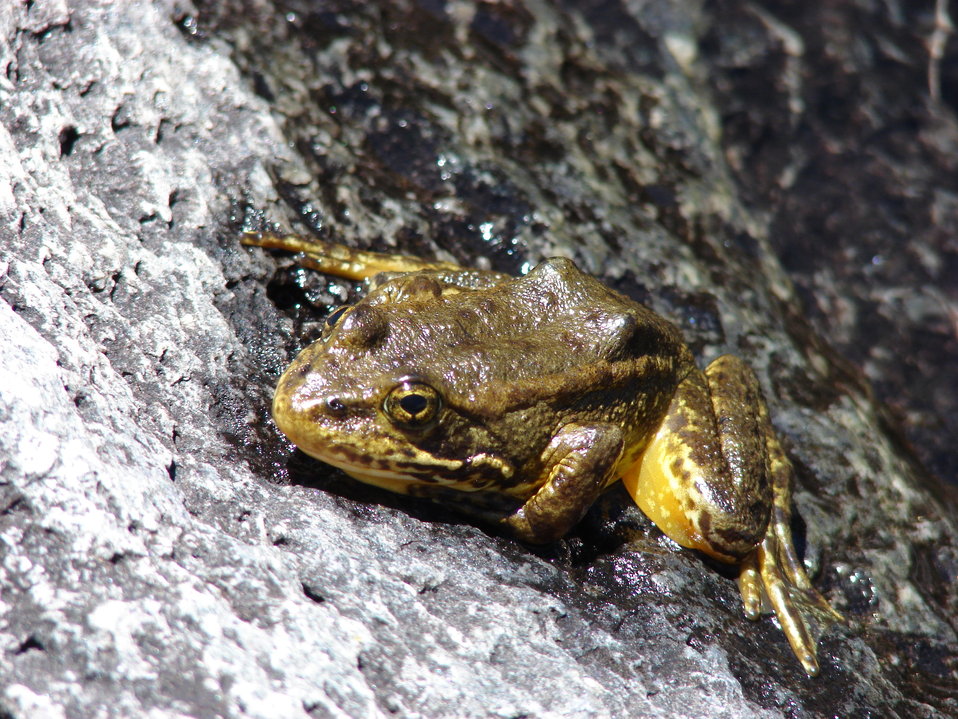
Yellow legged frog

The FWS is currently monitoring the following two populations of the Mountain Yellow-Legged frog

- Southern California population, endangered. Found in California and Nevada .

- all mountain yellow-legged frogs that occur north of the Tehachapi Mountains in the Sierra Nevada. This is a candidate for listing on the endangeres species act. Occurs in California and Nevada .
USFWS/Rick Kuyper